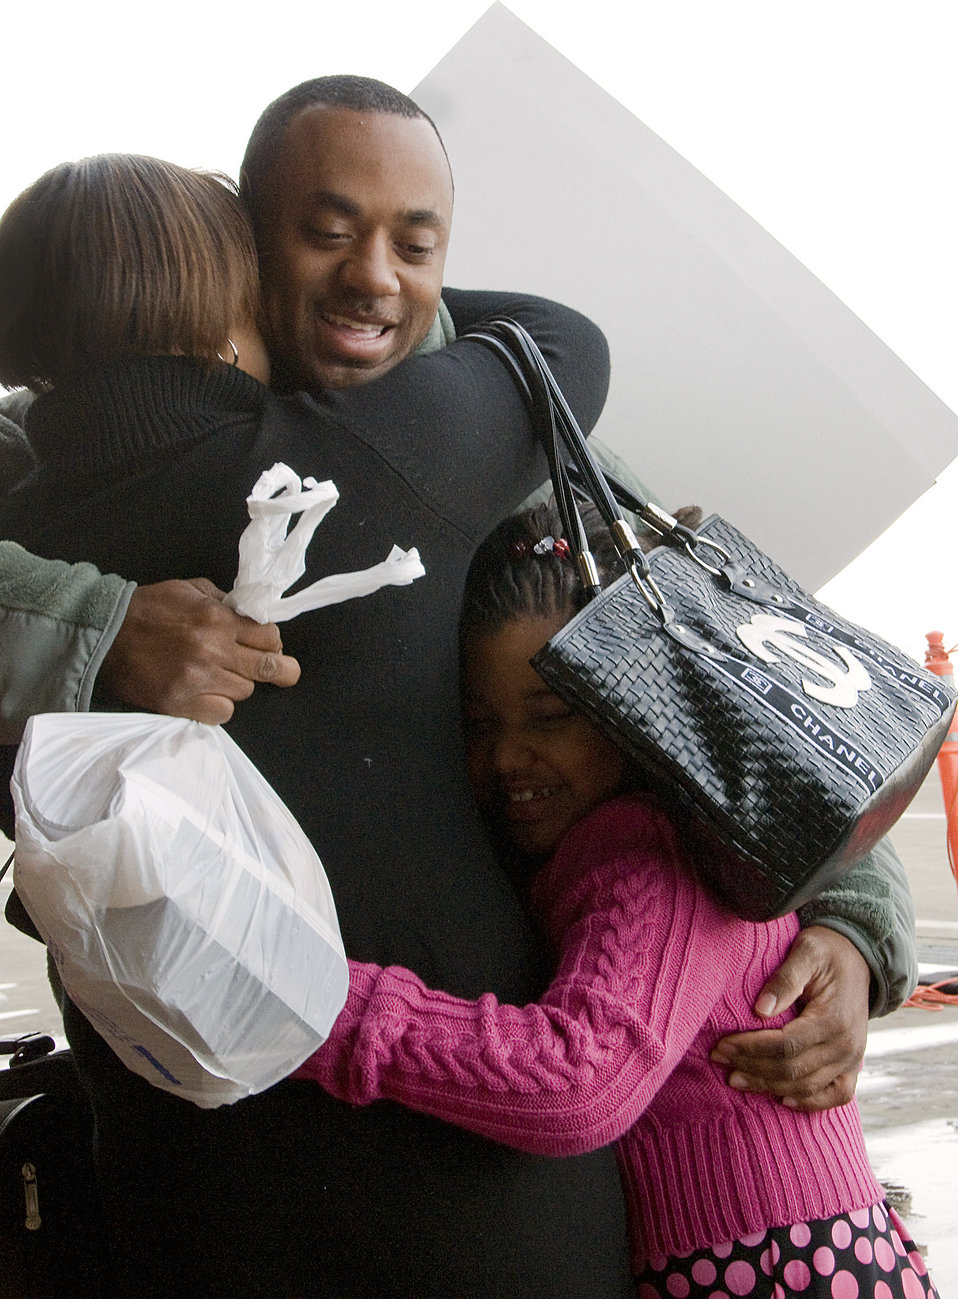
Misawa officials welcome home 300 deployed Airmen

Staff Sgt. Shunthany Banks hugs his wife, Taniunthi, and daughter, Shamaria, upon his return from a deployment March 1 at Misawa Air Base, Japan. Sergeant Banks, is assigned to the from the 35th Maintenance Squadron and deployed to Joint Base Balad, Iraq.